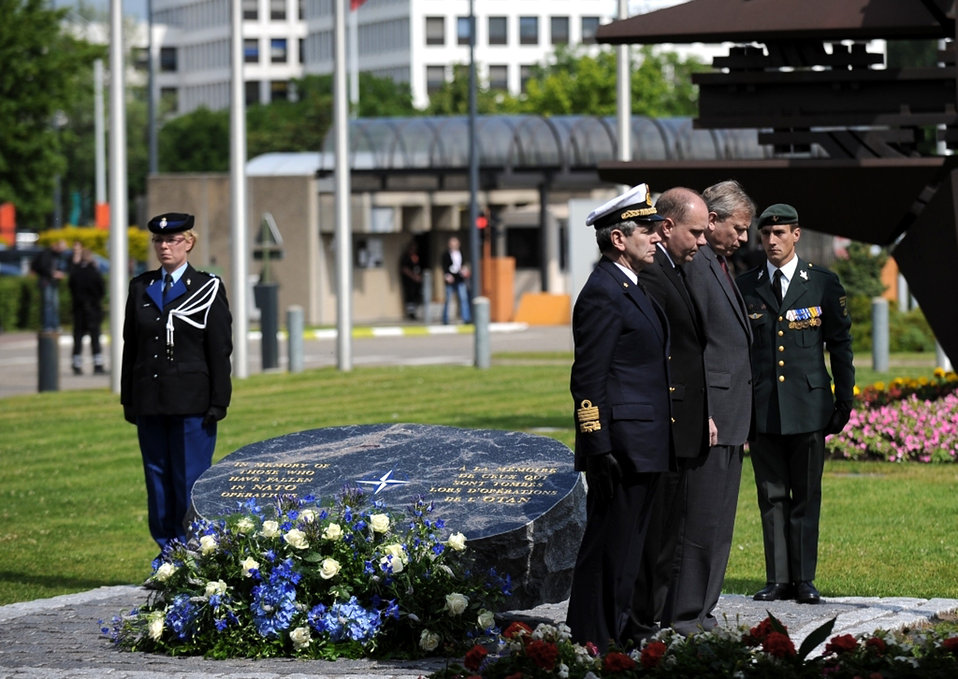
NATO memorial

NATO officials dedicate a memorial June 12 to those who have lost their lives in alliance operations during a ceremony at NATO headquarters in Brussels, Belgium.